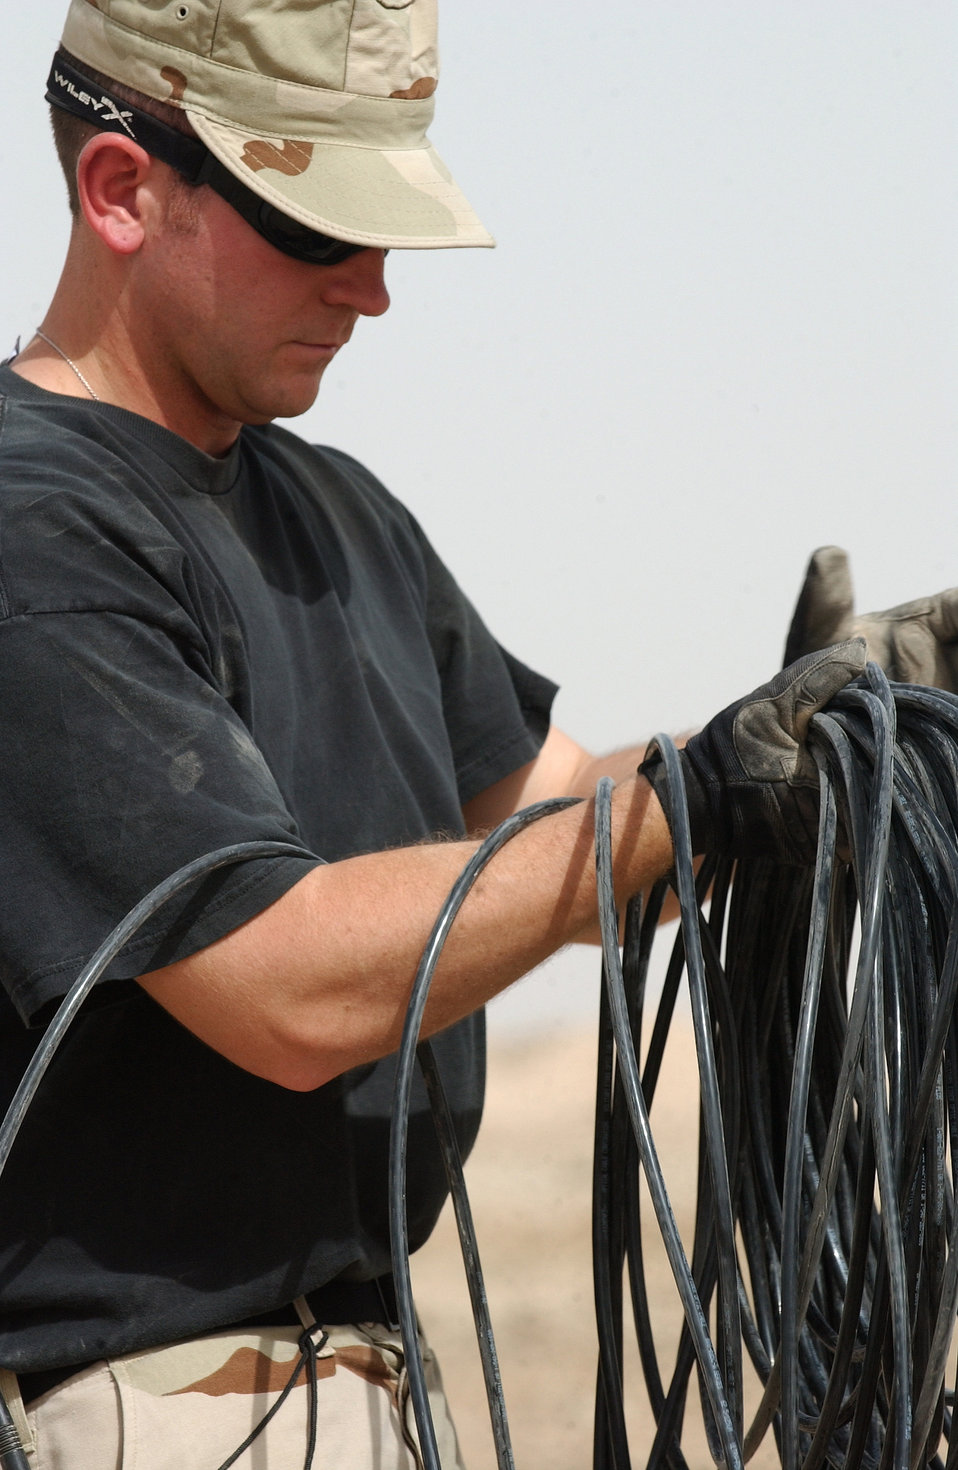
IRAQI FREEDOM

TALLIL AIR BASE, Iraq, Iraq -- Tech. Sergeant Mark Morris pulls on fiber to replace cable that was destroyed due to construction here. Sergeant Morris is assigned to the 407th Expeditionary Communications Squadron and deployed from McConnell Air Force Base, Kan.